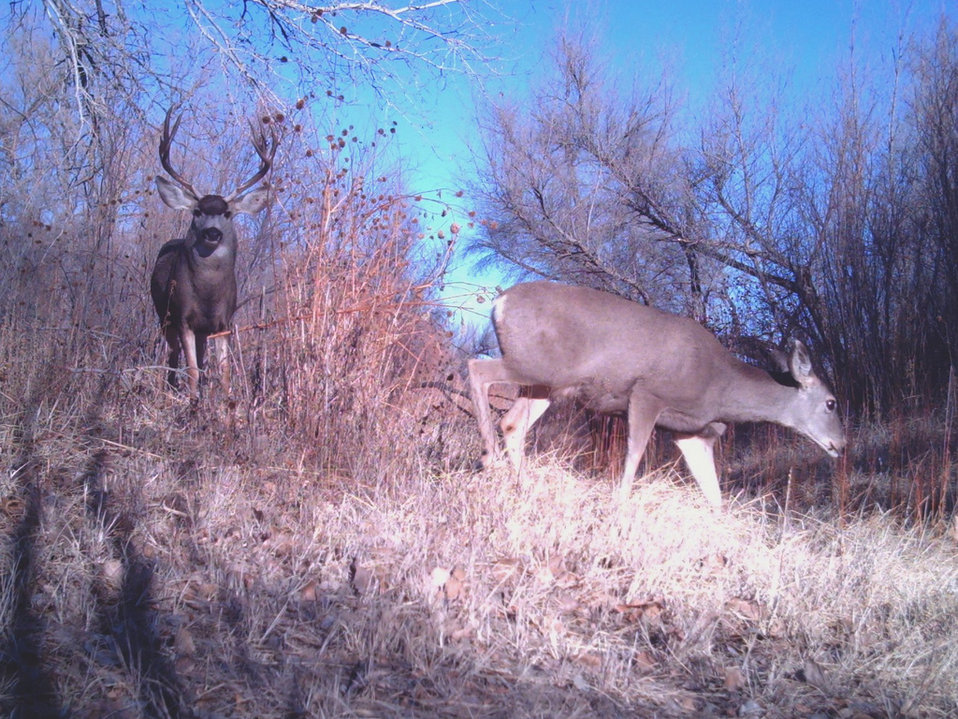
mule deer buck and doe

Bosque del Apache National Wildlife Refuge, NM
Camera trap project by Matt Farley, Jennifer Miyashiro, and J.N. Stuart.